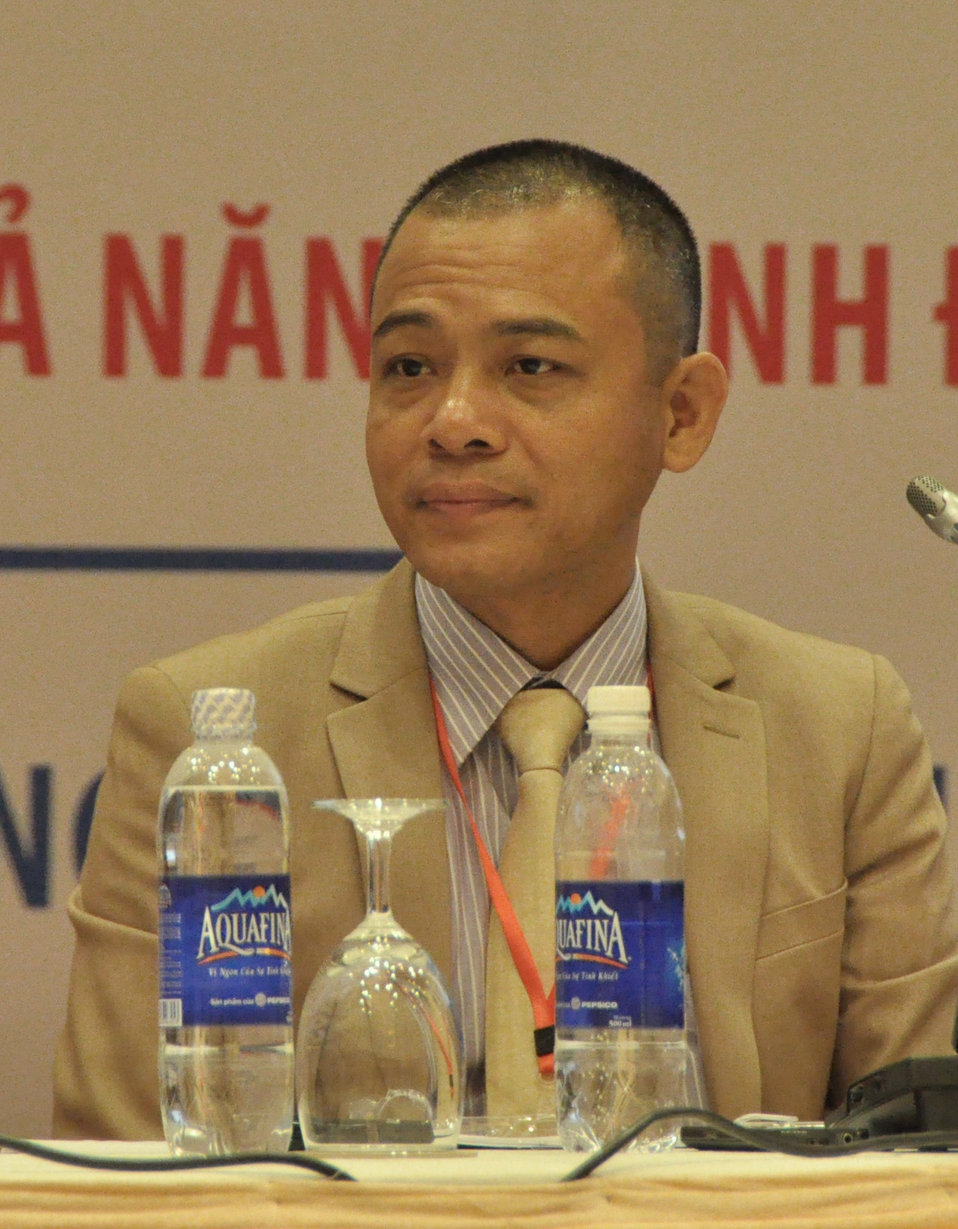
USAID Health Policy Initiative End of Project Workshop

Hanoi, August 14, 2013.